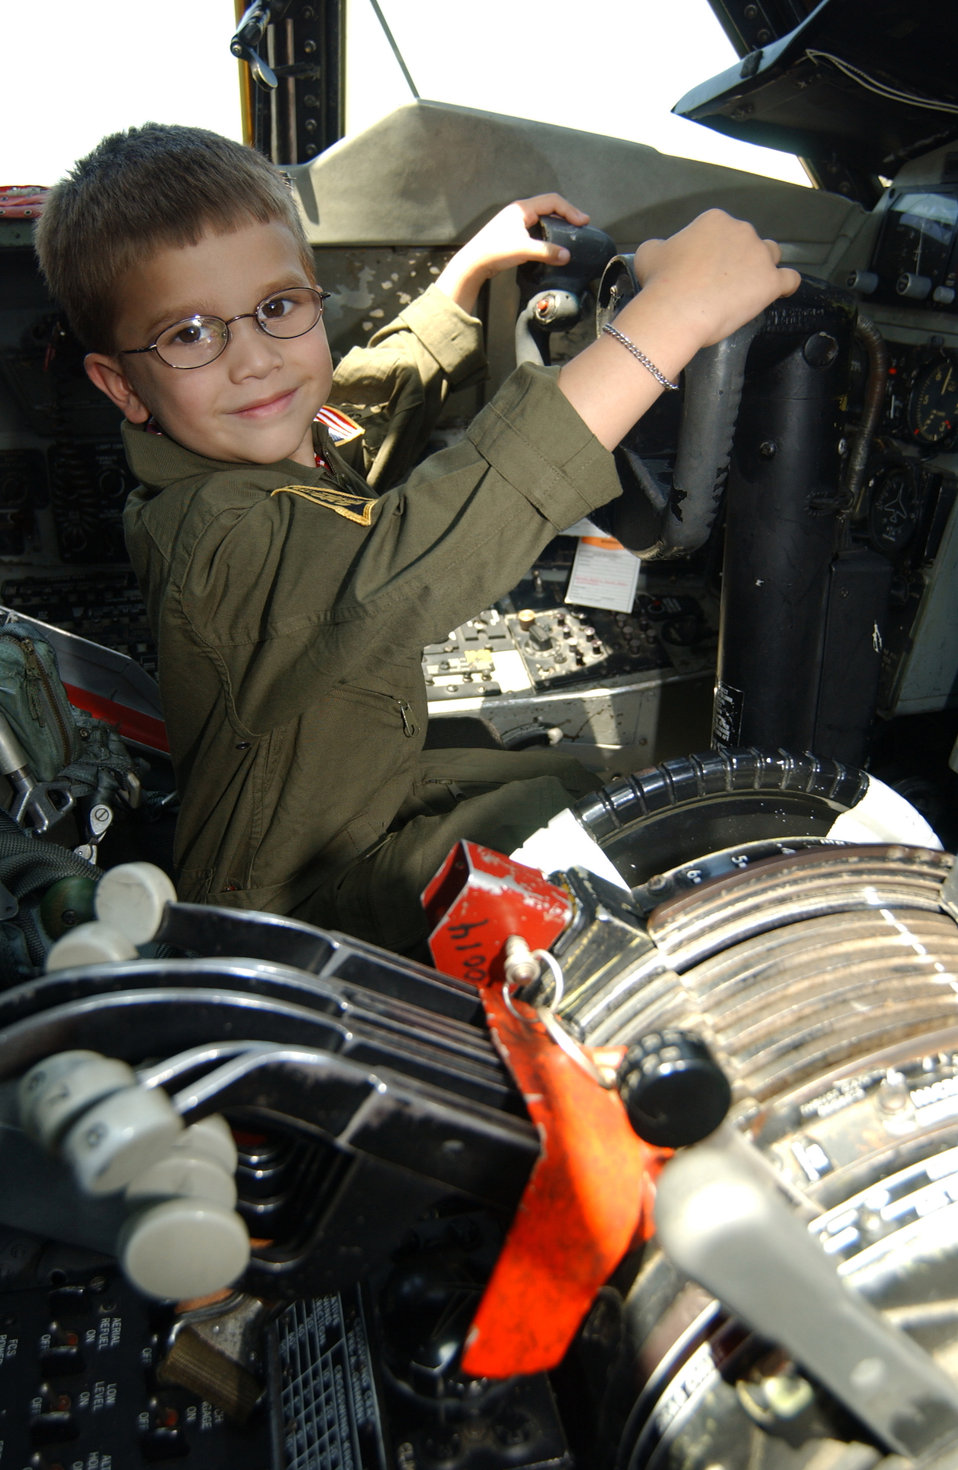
A day in the life

BARKSDALE AIR FORCE BASE, La. -- Walker Chowns sits in the pilot’s seat of a B-52H Stratofortess here June 1. Walker, who suffers from a brain tumor, went through a specialized